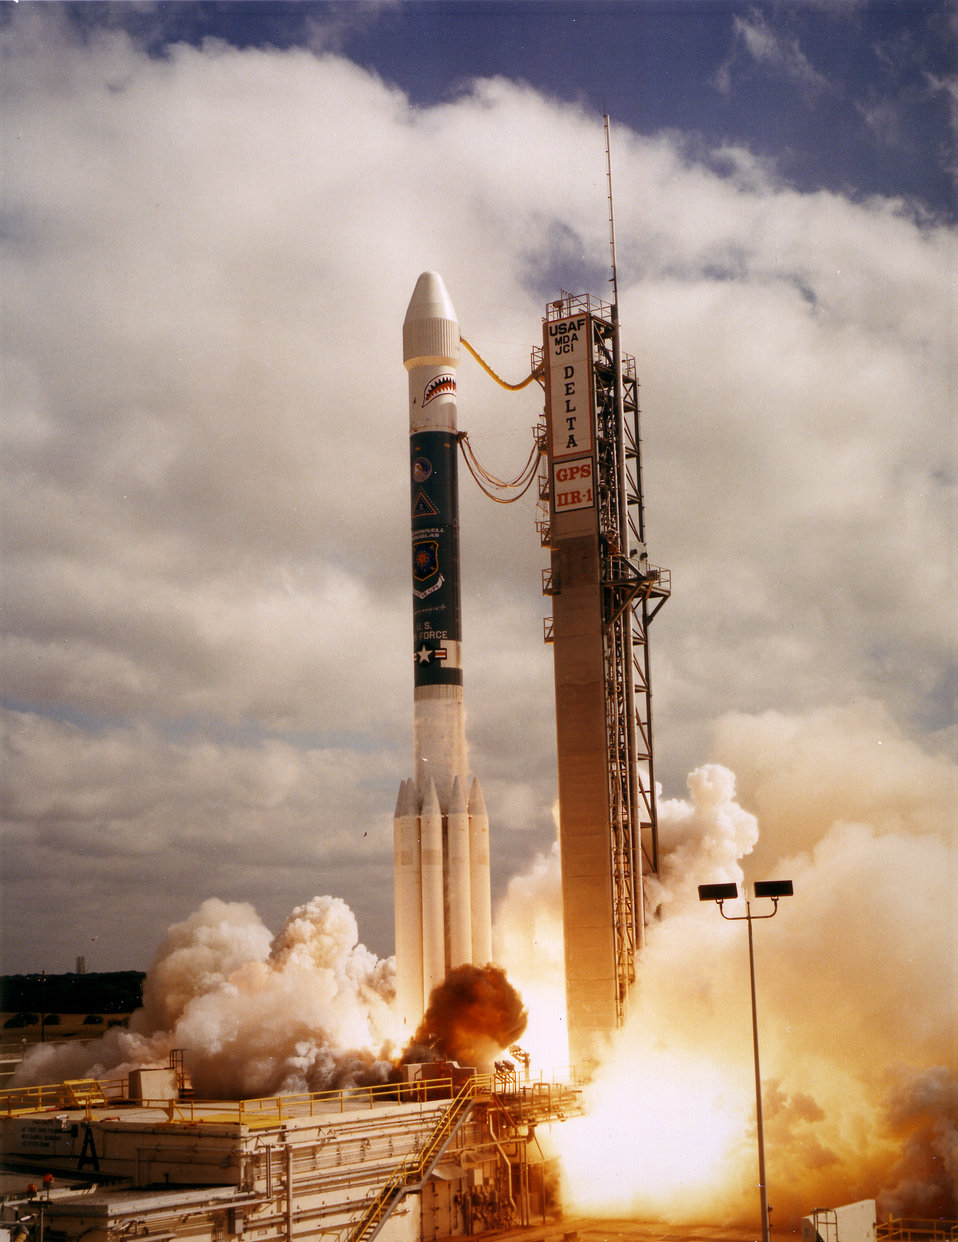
Delta II rocket

1990's -- The first McDonnell Douglas Delta II rocket launch for 1997 lifts off from space launch complex 17A. Cape Canaveral Air Station carrying a NAVSTAR GPS satellite. Seconds after liftoff -- at T 13 seconds, the rocket self-destructed. The launch took place January 17, 1997.